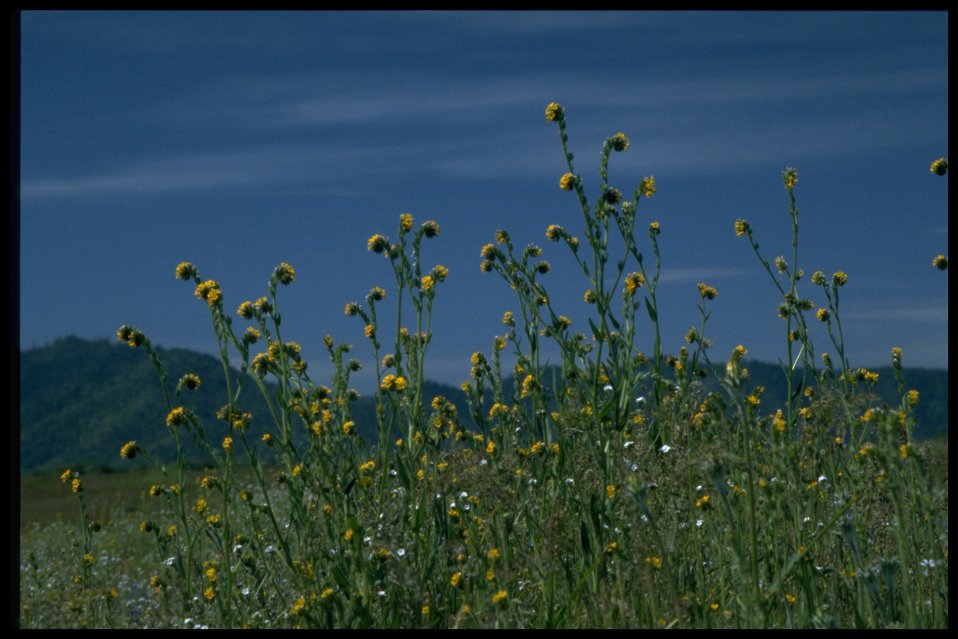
Farshot of Amsinckia intermedia, Amsinckia menziesii var intermedie.